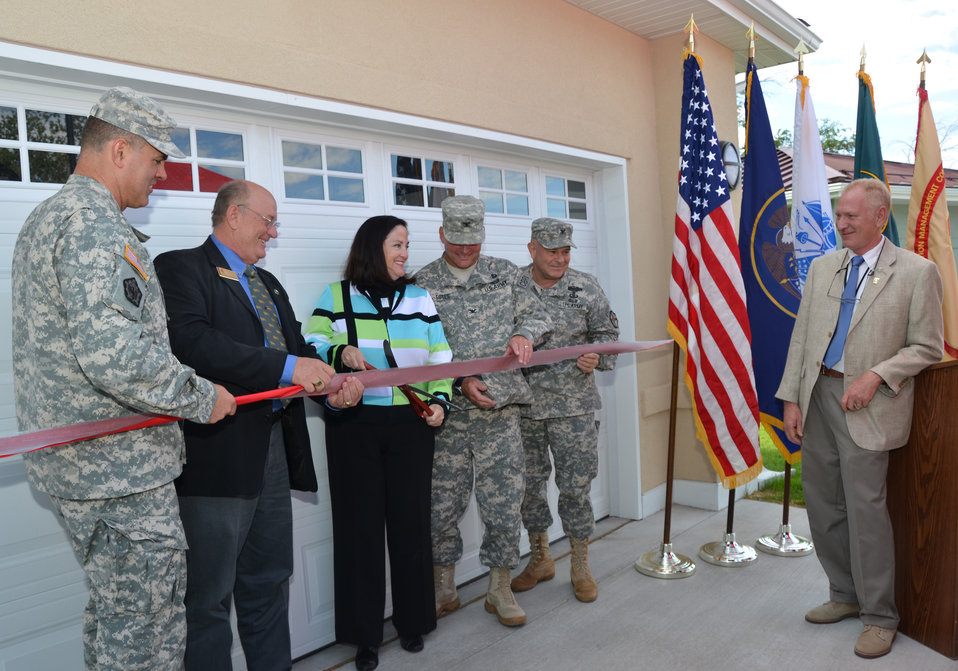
New Corps-built housing officially opens at Dugway Proving Grounds

Katherine Hammack, Assistant Secretary of the Army (Installation, Energy and Environment), was one of several officials who attended a ribbon-cutting ceremony for the new housing project at Dugway Proving Grounds, Utah, held July 26, 2012. The project was overseen by the U.S. Army Corps of Engineers Sacramento District, and received a platinum certification in Leadership in Energy and Environmental Design standards. From left to right: Col. Bill Leady, commander of the U.S. Army Corps of Engineers Sacramento District; Audy Snodgrass, Dugway garrison manager; Hammack; Col. A. Scott Estes, Dugway Proving Ground commander; Col. Darcy Brewer, acting regional director, Army Installation Management Command; and John Craig, Dugway’s garrison director of public works.